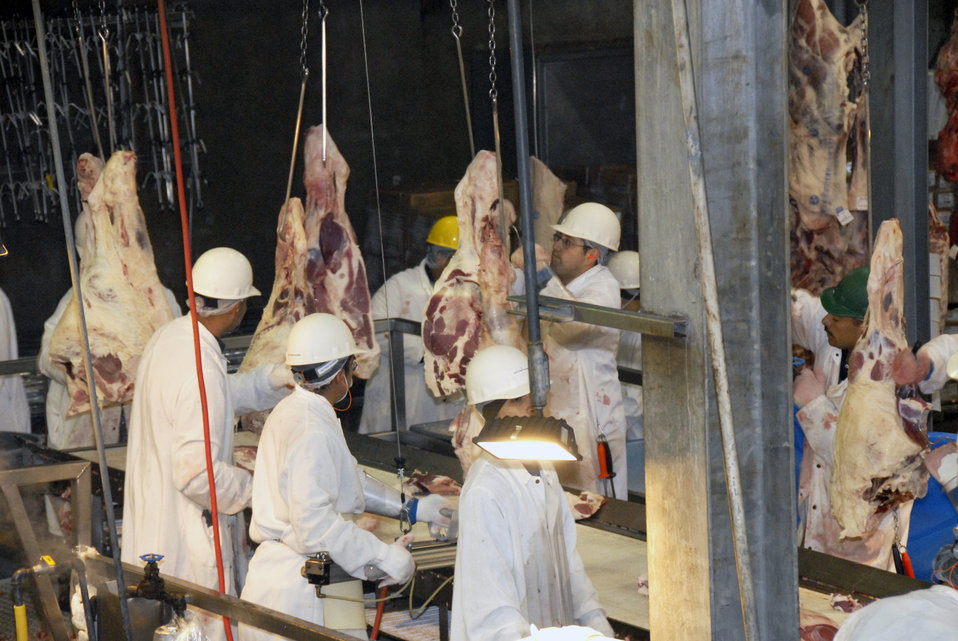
Workers at the Sam Kane beef slaughterhouse in Corpus Christi, Texas on June 10, 2008 dissect, sort and separate beef parts. U.S. Department of Agriculture (USDA) Food Safety and Inspection Service (FSIS) inspectors are on site to ensure the beef is processed in accordance with USDA FSIS regulations.